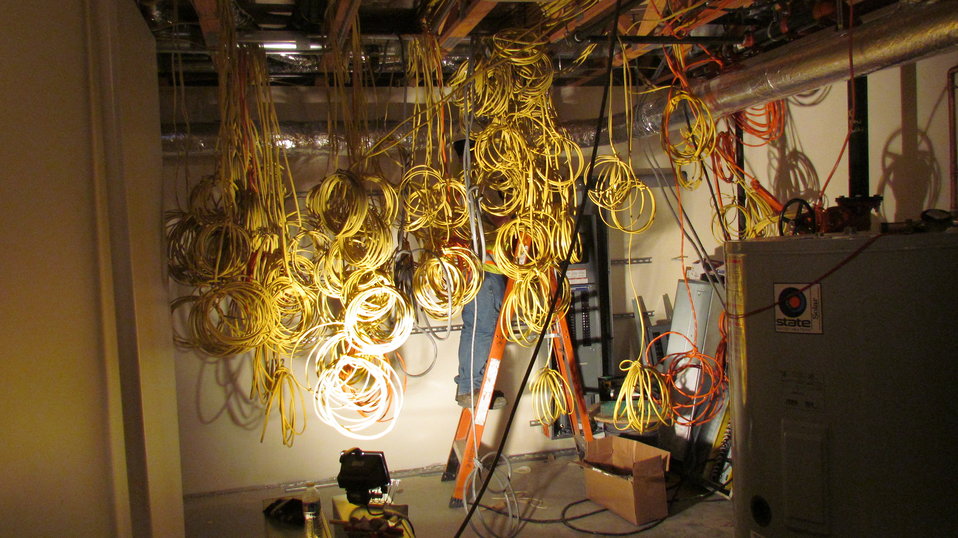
Workman connecting electrical wiring to electrical breaker boxes. And you thought you were having a challenging day?